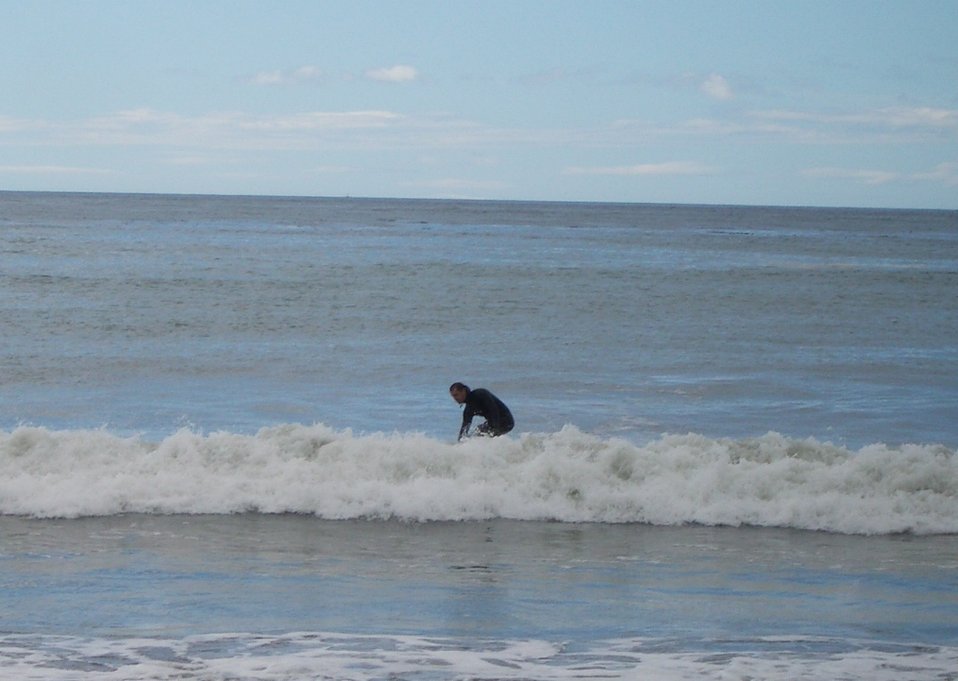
NOAA Ship RAINIER personnel surfing on Kodiak Island. The Beach Boys never considered this. Santa Cruz and Kodiak, surfin' USA.